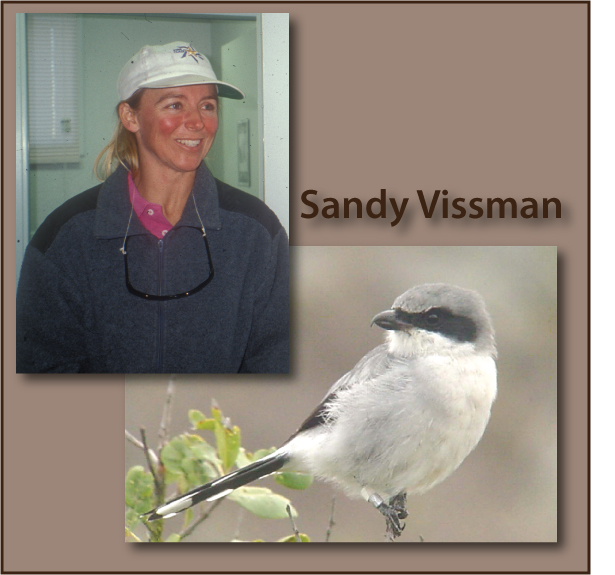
Recovery Champion Sandy Vissman and a San Clemente Loggerhead shrike

The Pacific Southwest Region of the U.S. Fish and Wildlife Service has announced their three awardees of the agency’s 2010 Recovery Champion Award. Service employee Sandy Vissman was selected for her work as lead biologist with the San Clemente Loggerhead Strike Recovery Team. Under her leadership the population of this rare bird has grown, and she has forged important partnerships with conservation organizations and agencies. Implementation of the San Clemente Loggerhead Shrike program is especially complicated by the remote nature of the one place where the birds are found. Vissman has overcome these obstacles and shown that results are truly achievable.